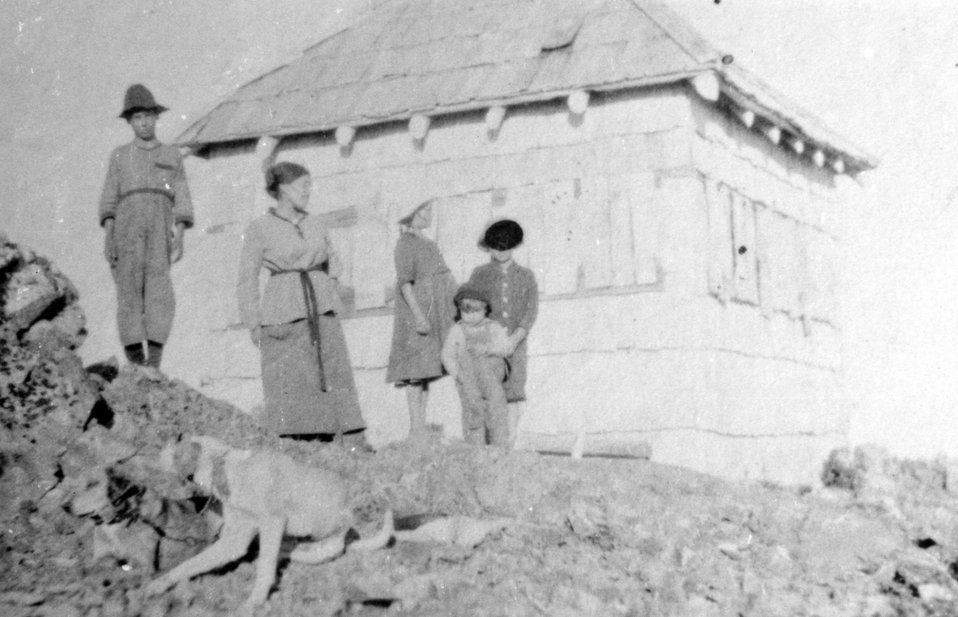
Viola Frye and children at Bear Camp lookout or snow camp.